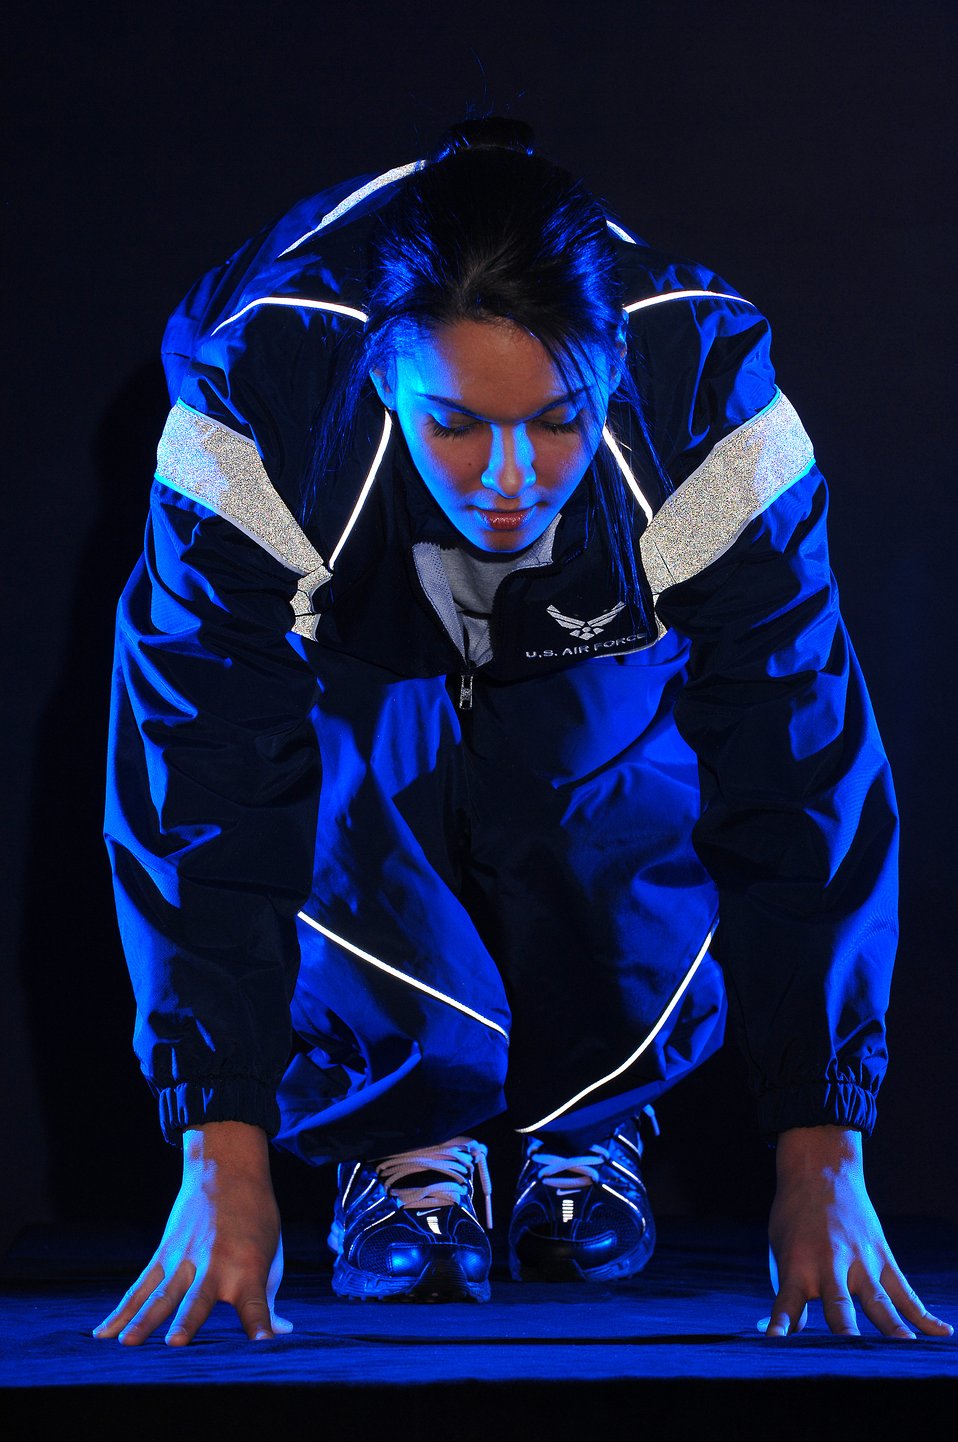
Hold that pose

Airman 1st Class Savannah Orozco is photographed in her physical training uniform for a fitness poster Jan. 5 in the multimedia studio at McChord Air Force Base, Wash. Airman Orozco is with the 62nd Operations Support Squadron there.